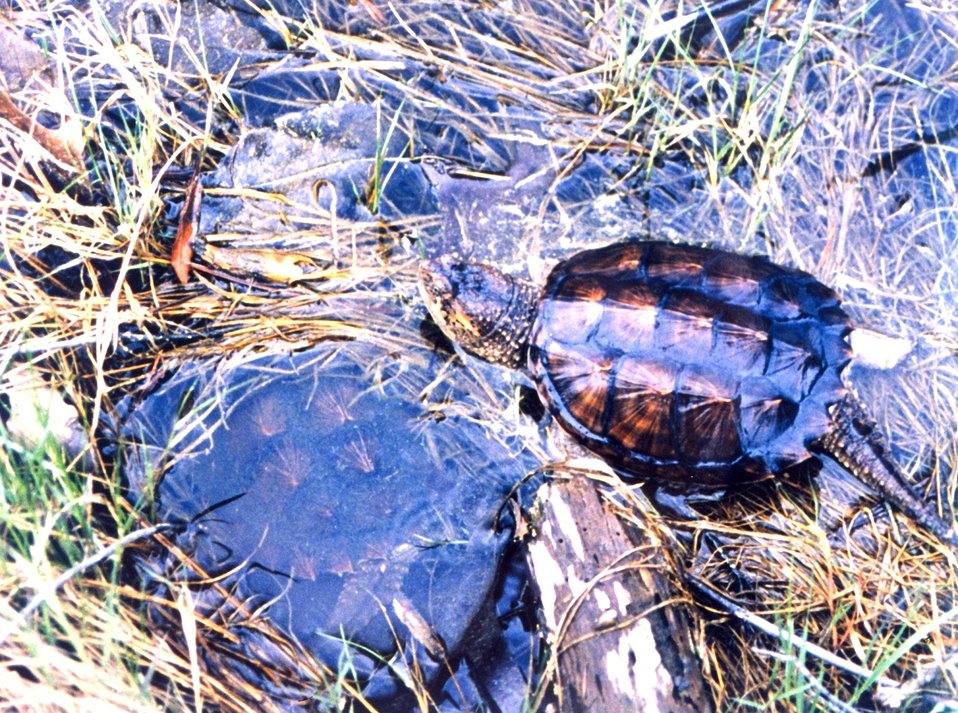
Young snapping turtles being released into the wild. The one on the left is underwater.